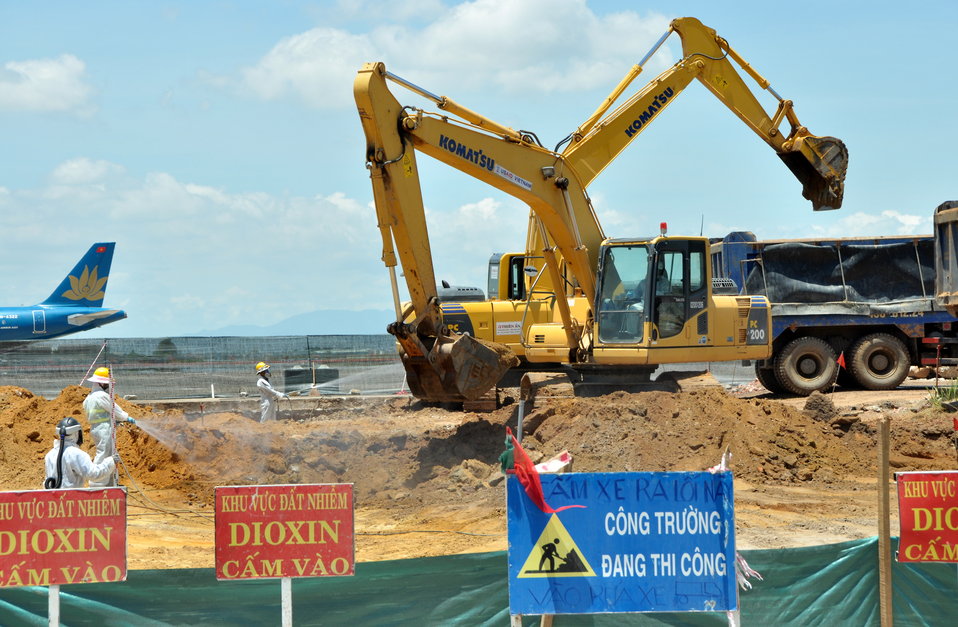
Environmental Remediation Progress at the Danang Airport site

Progress at the Remediation of Dioxin Contamination Project Site

Danang, Vietnam, June 5, 2013